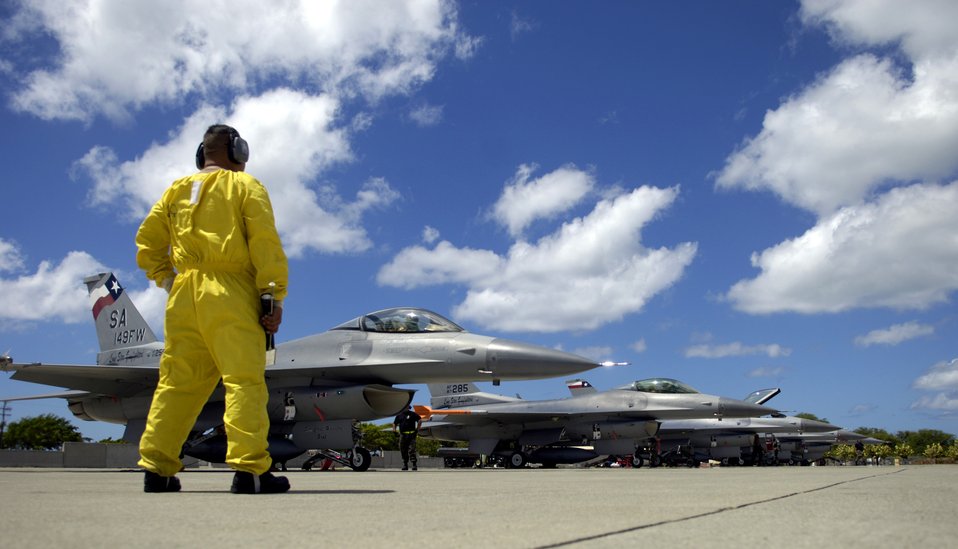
Eagles, Falcons face off in air exercise

Tech. Sgt. Gerardo Guevara waits for F-16 Fighting Falcons to shut down their engines before conducting post-flight checks at Hickam Air Force Base, Hawaii, Sept. 8. Six F-16s from the Texas Air National Guard's 149th Fighter Wing came to Hickam AFB to participate in Exercise Sentry Aloha. Sergeant Guevara is a maintainer from the 149th FW.